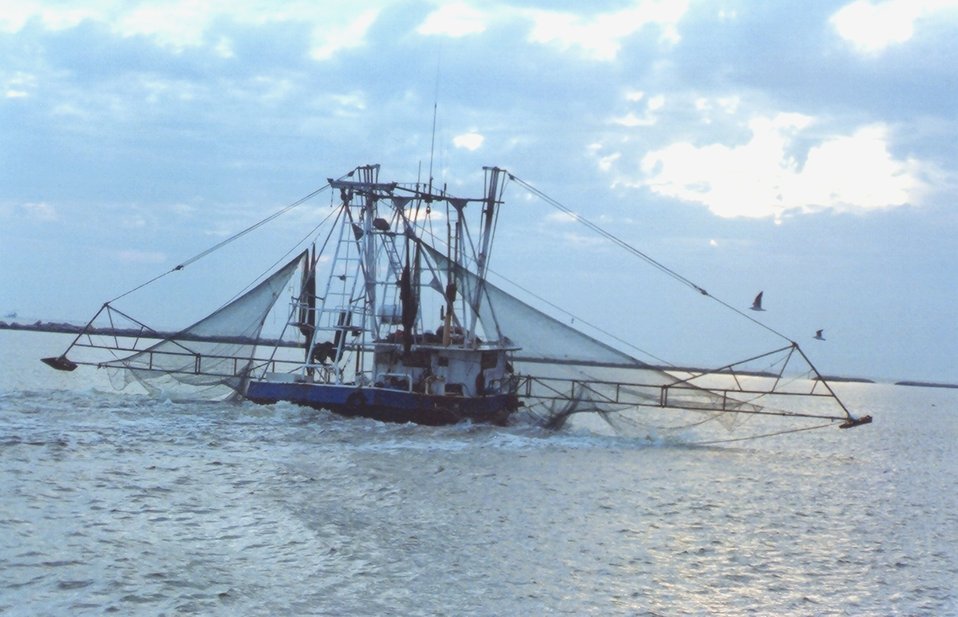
Shrimp boat